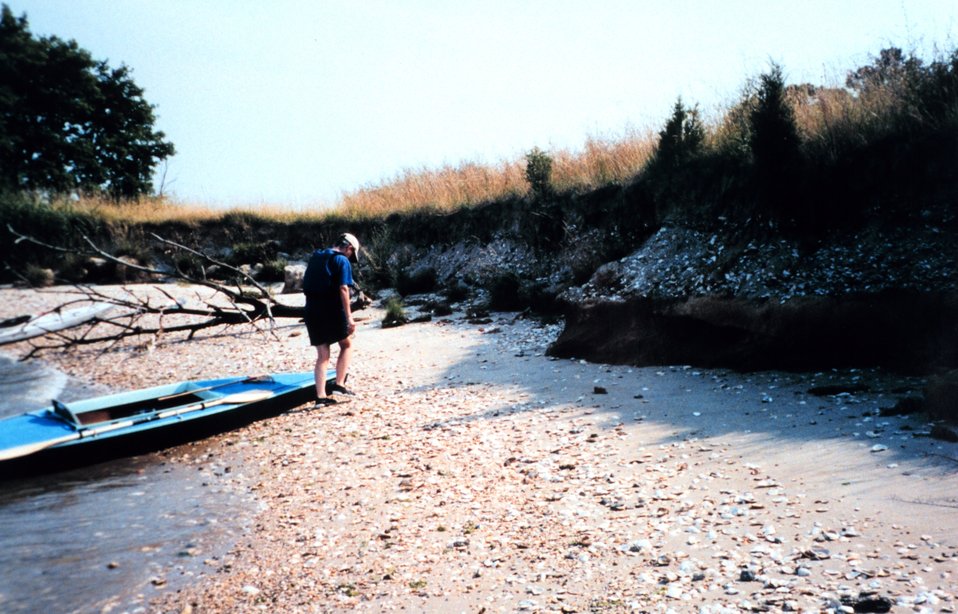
Eroded cliffs along the Tred Avon River reveal buried piles of oyster shells.